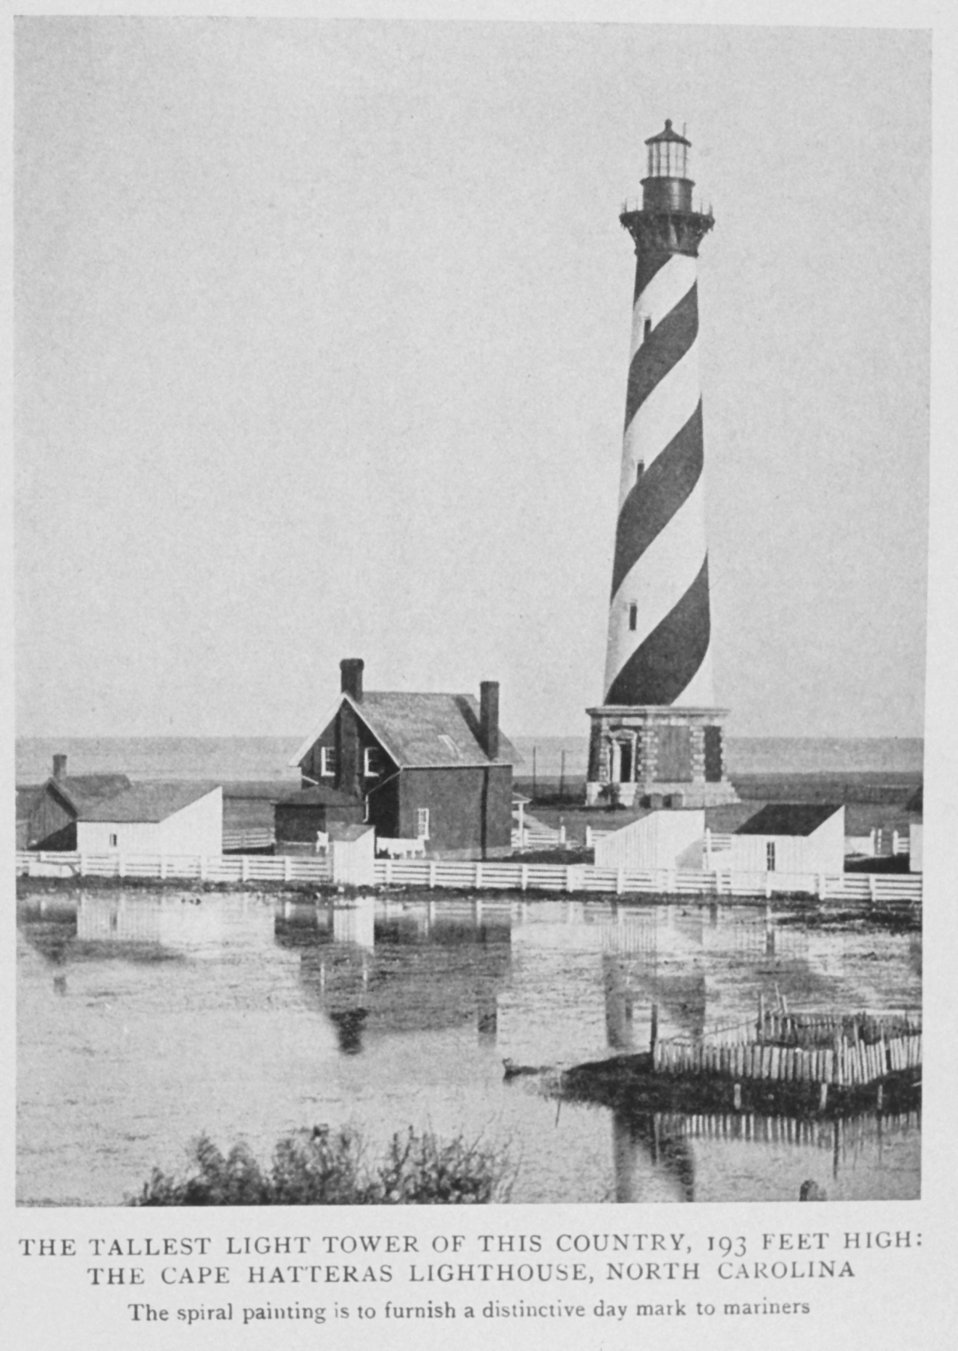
The Tallest Lighthouse Tower of this Country, 193 Feet High; The Cape Hatteras Lighthouse, North Carolina. The spiral painting is to furnish a distinctive day mark to mariners. In: 'Lighthouses and Lightships of the United States' by George R. Putnam, p. 93, 1917. Houghton Mifflin and Company, Boston. Library Call No. 527.7 P98.